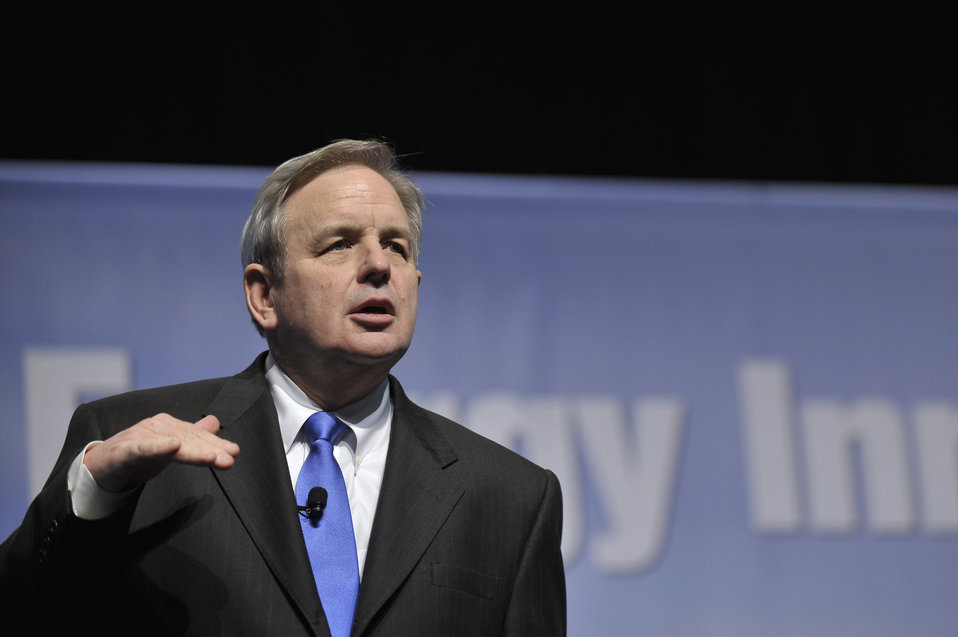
ARPA-E Energy Innovation Summit 2011, 73 of 83

Chad Holliday Jr., Chairman, Bank of America and former Chairman & CEO, Dupont.